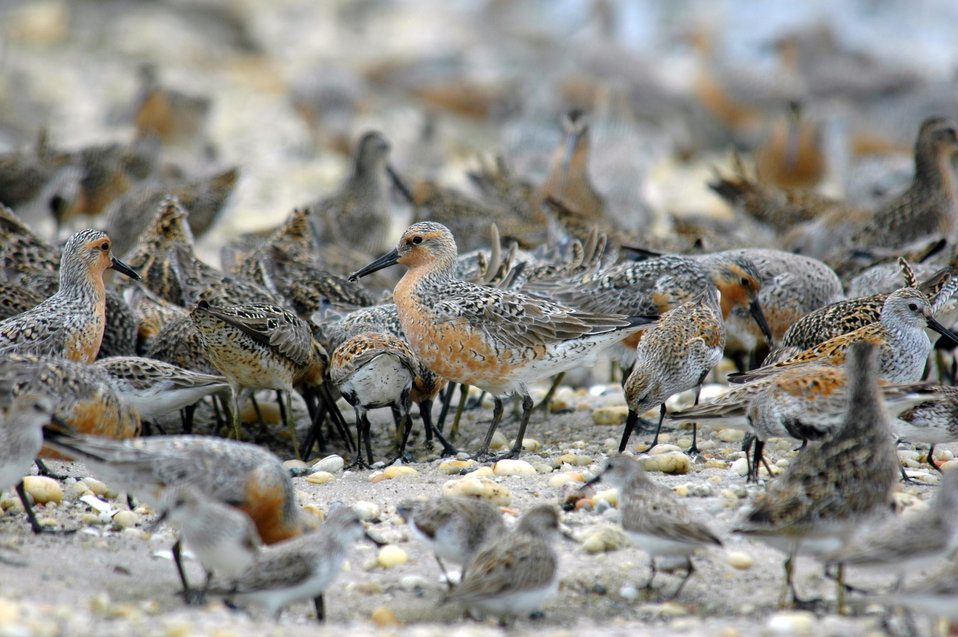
Red Knot

Mispillion Harbor, Delaware.